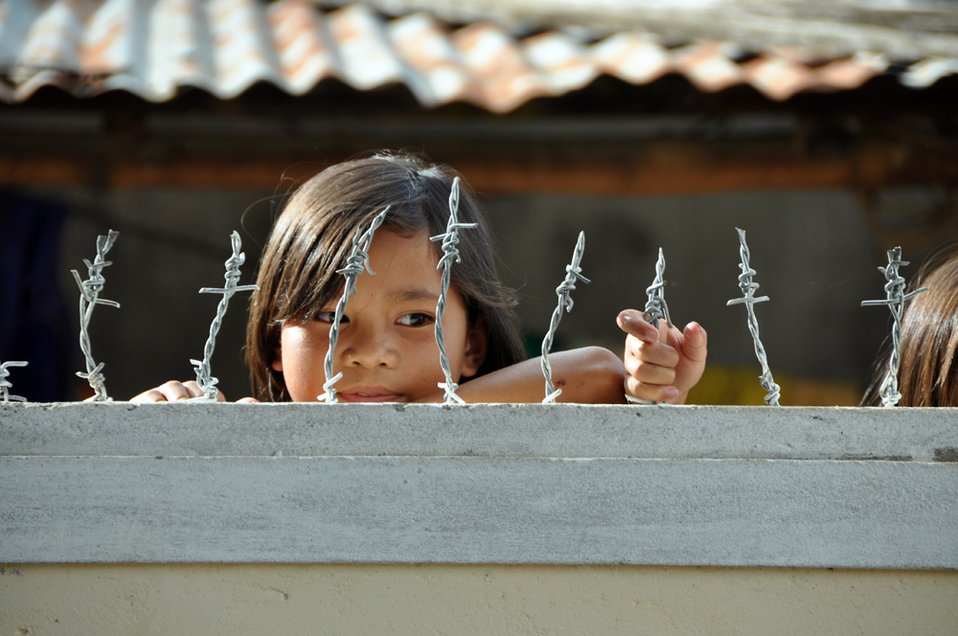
USAID contributes to refurbished pre-schools and teacher training in Vietnam